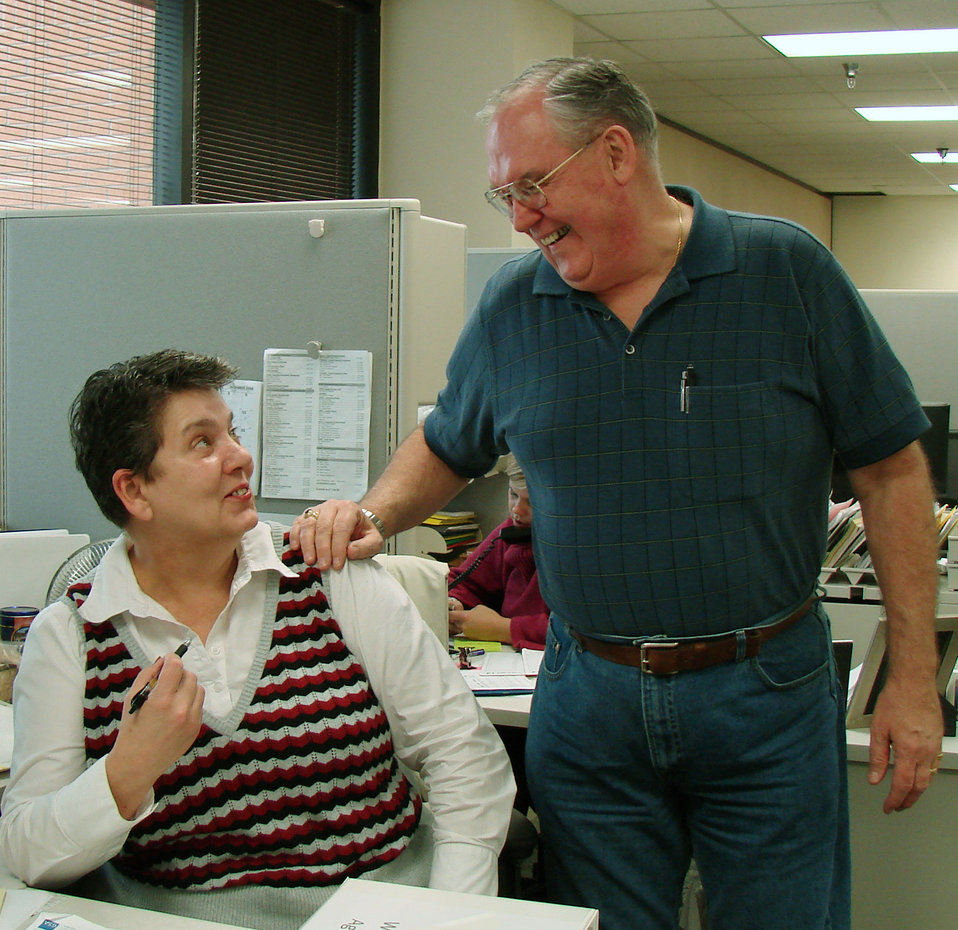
Valiant action saves co-worker from choking

David Gindlesberger (right) and Rose Palacios talk while at work Dec. 17 at Vance Air Force Base, Okla. Mr. Gindlesberger saved Ms. Palacios from choking on a piece of candy Dec. 5 by using the Heimlich maneuver. They work in the 71st Comptroller-Contractor Squadron.